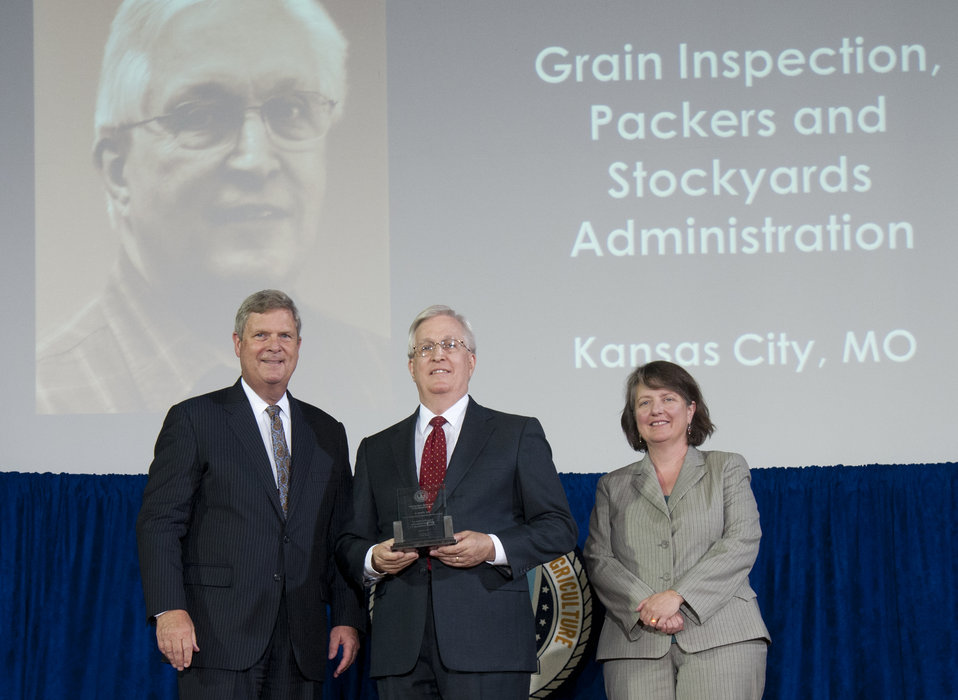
Agriculture Secretary Tom Vilsack and Agriculture Deputy Secretary Kathleen Merrigan present the Secretary’s Honor Award for Personal and Professional Excellence to Grain Inspection, Packers and Stockyards Administration (GIPSA) Dr. David B. Funk at the U.S. Department of Agriculture (USDA) 64th Annual Honor Awards Ceremony in Washington, D.C. on Wednesday, Sept. 12, 2012. Dr. Funk developed the Unified Grain Moisture Algorithm (UGMA) technology adapted into commercial use that significantly improved measuring moisture in grain.